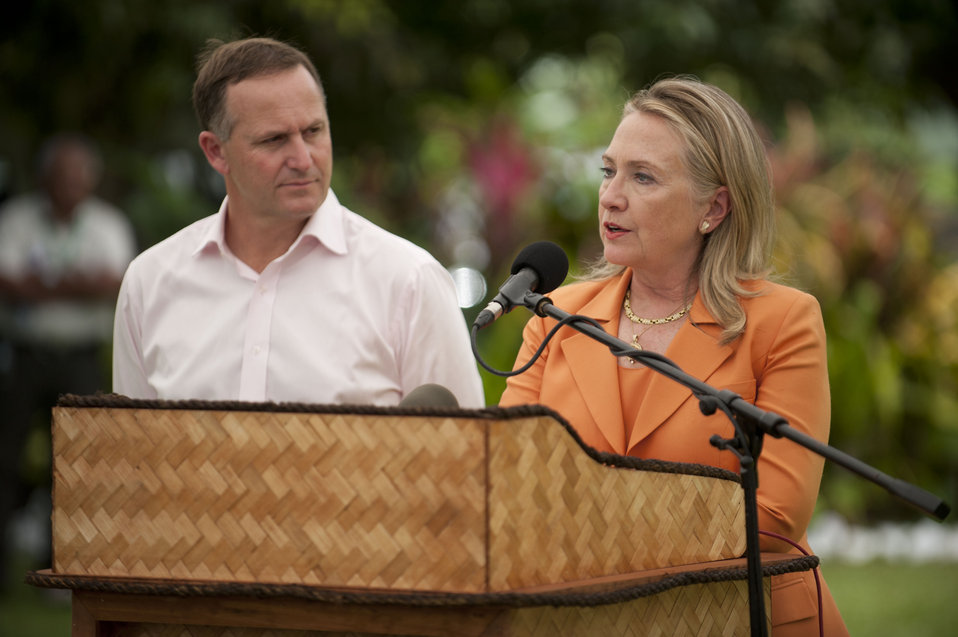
Secretary Clinton With New Zealand Prime Minister Key

U.S. Secretary of State Hillary Rodham Clinton and Prime Minister John Key of New Zealand participate in a joint press availability at the Pacific Islands Forum in Rarotonga, Cook Islands, August 31, 2012.